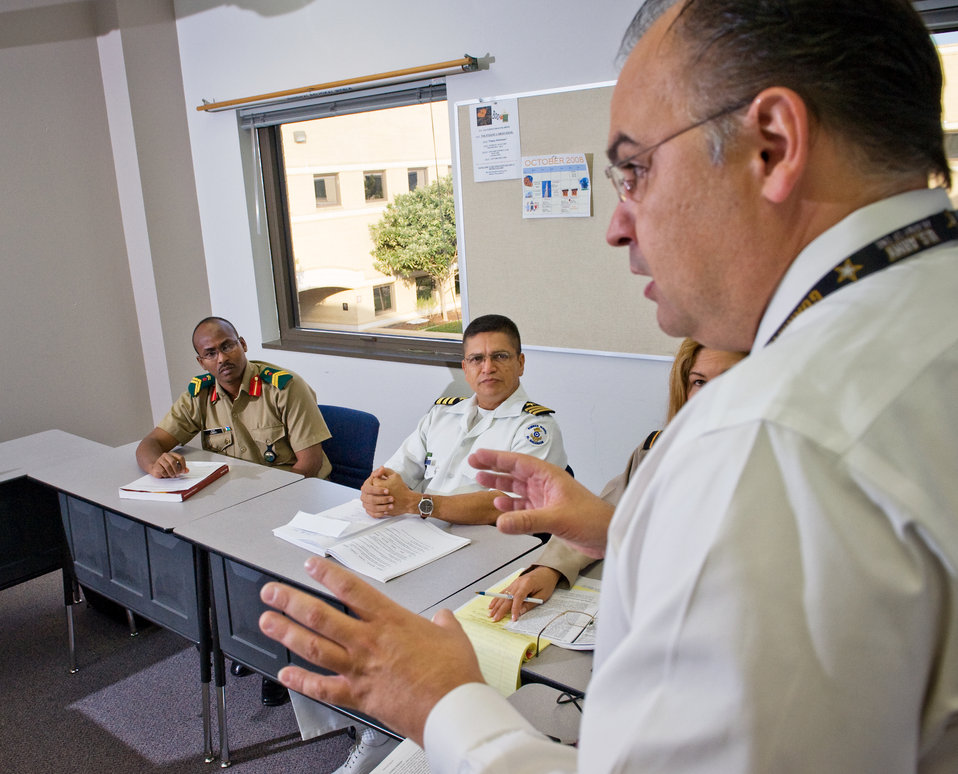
Lackland-based institute teaches English to partner nations

Michael Sheridan discusses the elements of listener fatigue during the American English Language Instructor Course Oct. 22 at the Defense Language Institute, Lackland Air Force Base, Texas. Mr. Sheridan is an English Instructor in the Instructor Development Branch.